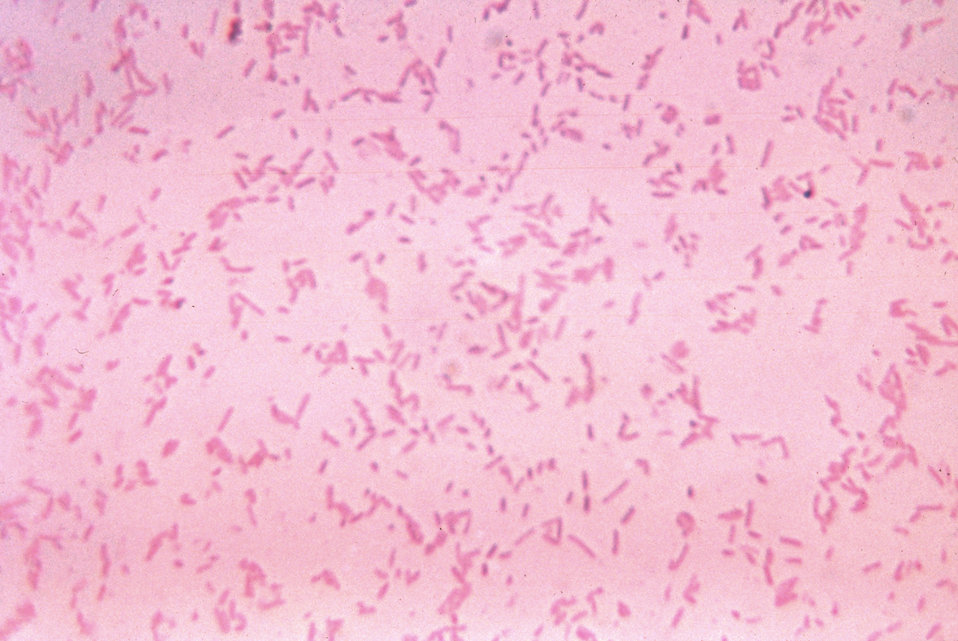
This micrograph depicts Bacteroides fragilis ss. fragilis bacteria cultured in blood agar medium for 48 hours.